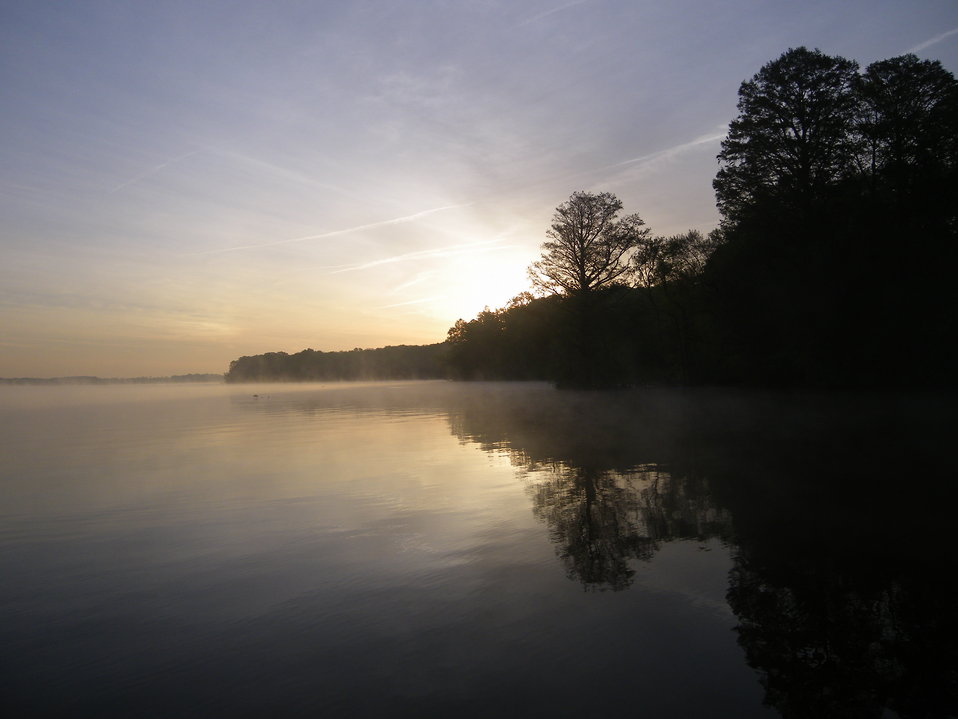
Sunset

James River National Wildlife Refuge, VA.